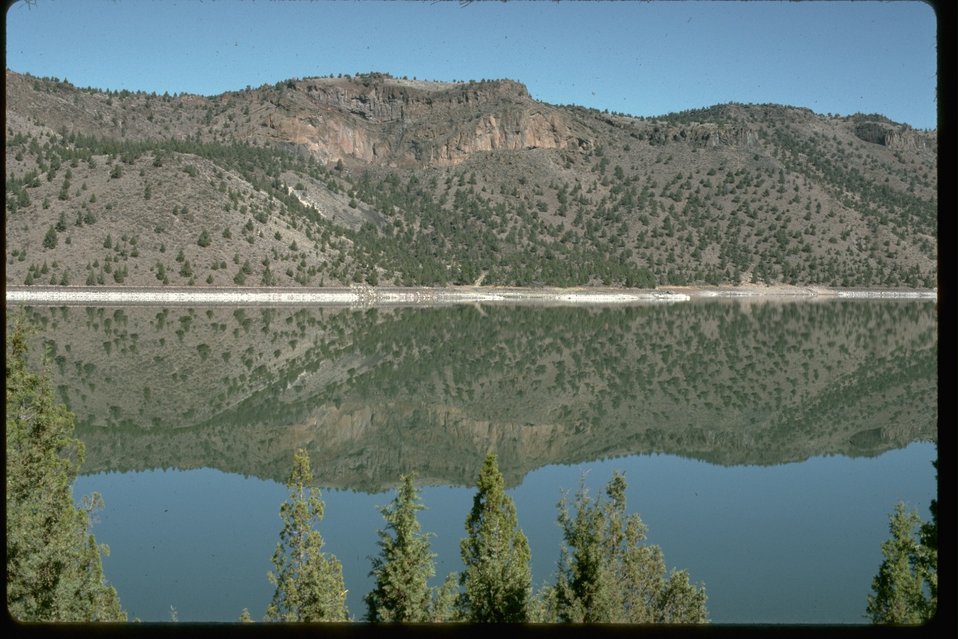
View across Prineville Reservoir.